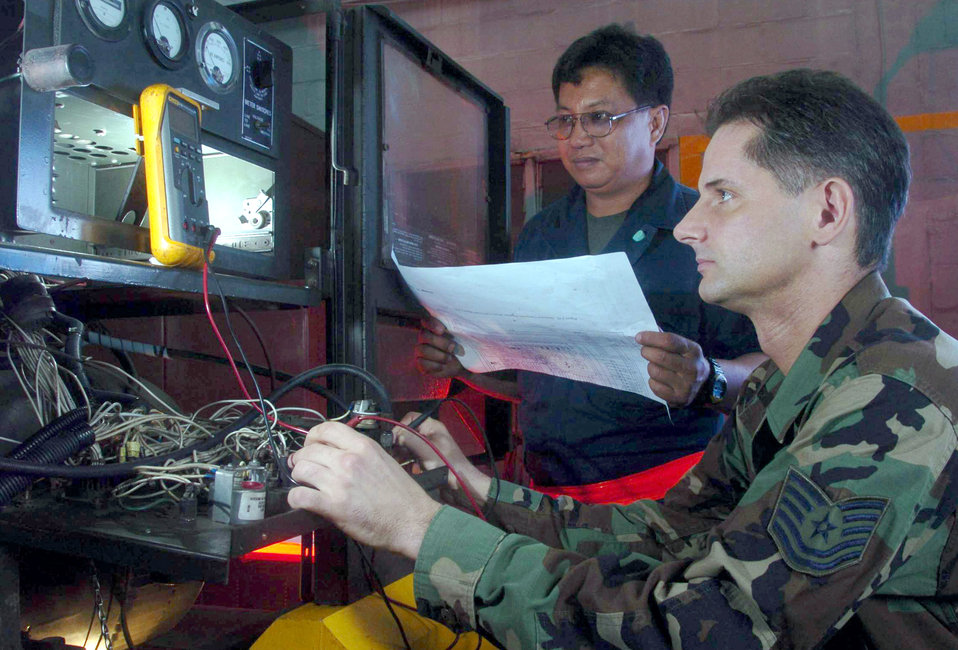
Succeeding in Singapore

PAYA LABAR AIR BASE, Singapore -- Tech. Sgt. Darin Opalenik troubleshoots a generator with Wilfredo Ritumban, a civilian contractor, here. Sergeant Opalenik is an aerospace ground equipment technician from the 497th Combat Training Squadron. The squadron supports regular temporary-duty rotations of U.S. fighter aircraft.